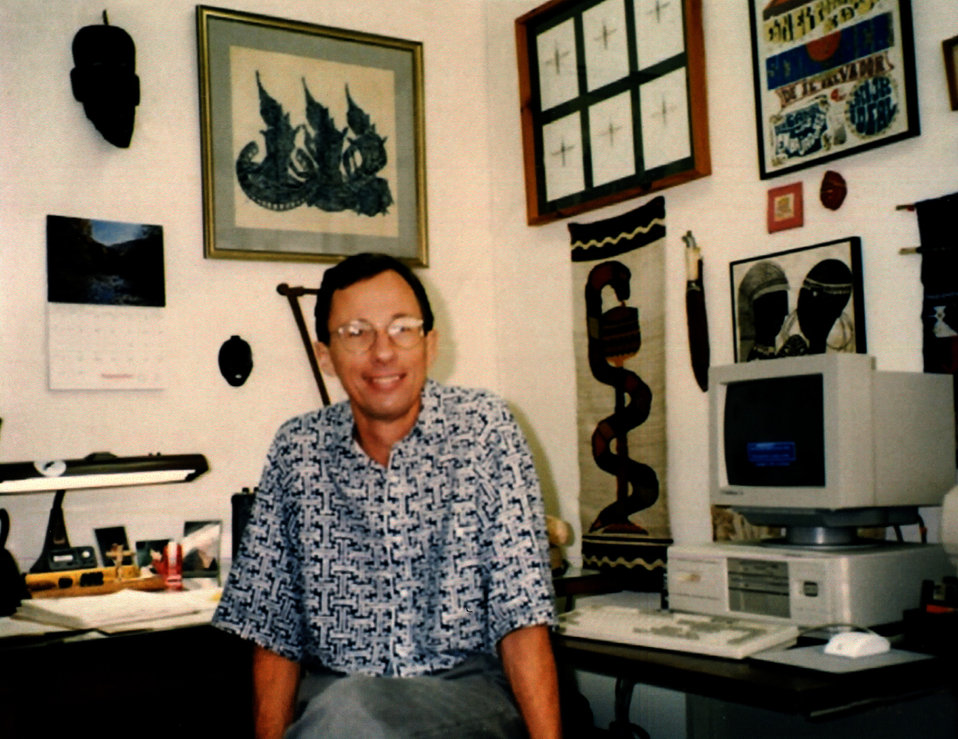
This photograph showed Carlos C. Campbell, M.D., first Chief of the Malaria Branch of the Centers for Disease Control's Division of Parasitic Diseases (DPD).